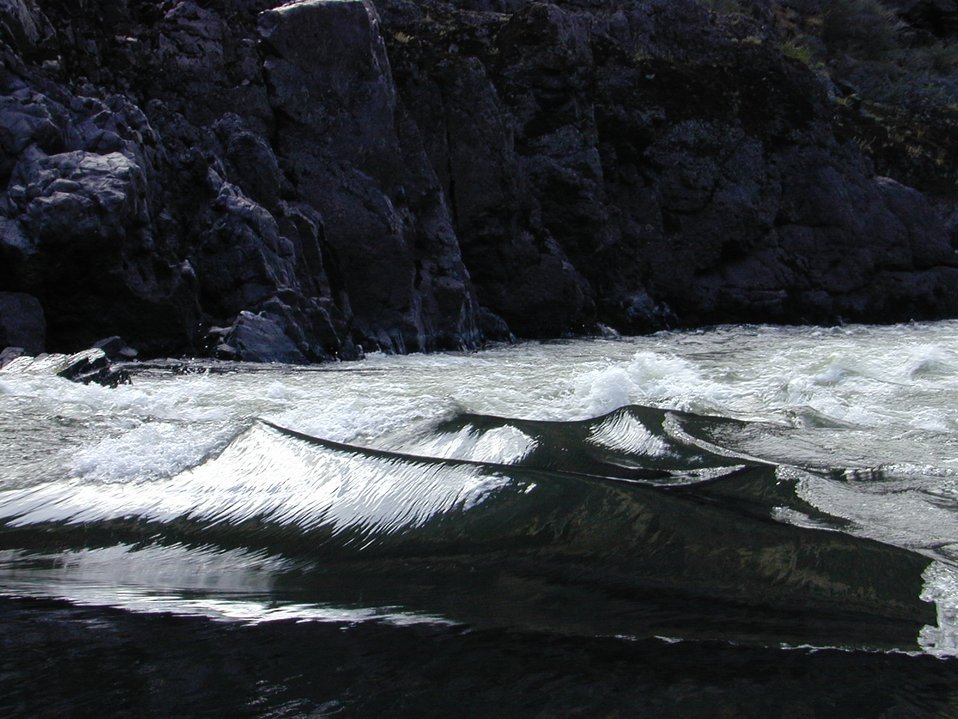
Recreation Rafting on Lower Salmon River Cottonwood Field Office UCSC Upper Columbia Salmon Clearwater District